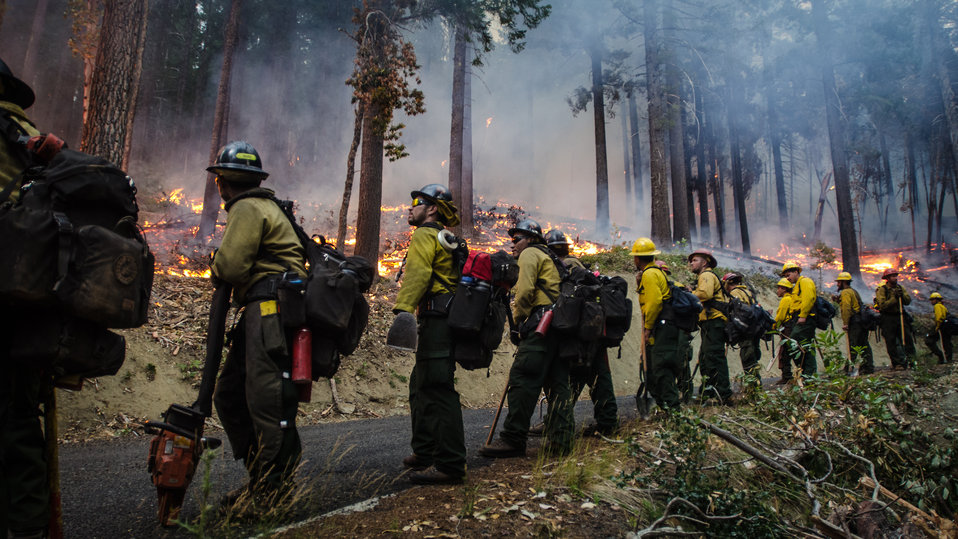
Geronimo Interagency Hotshot Crew, Department of the Interior (DOI) Indian Affairs (IA) Bureau of Indian Affairs (BIA) San Carlos Agency in Arizona; on assignment at the Big Windy Complex Wildlands Fire, approximately 15 miles west of Interstate-5 and East Northeast of Galice, Oregon, conducts a prescribed burn 'burnout' operation to help stop the main fire that may head toward this roadway, on Friday, Aug 9, 2013. The primary mission of the Interagency Hotshot Crews (IHC) is to provide a safe, organized, mobile and highly skilled hand crew for all phases of wildland fire suppression. The arduous duties and specialized assignments required of IHC personnel require uniform staffing, certification, training, equipment, communications, transportation, organization, and qualifications that adhere to interagency standards and guidelines.